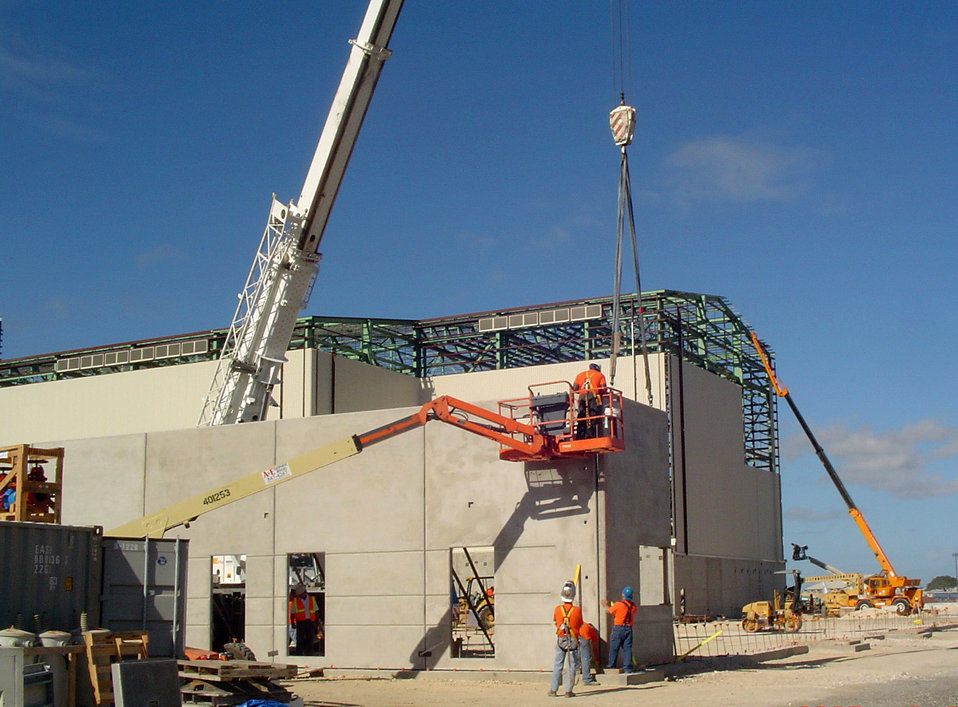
AFCEE builds new C-17 hangar at Hickam

URS employees, contracted by the Air Force Center for Engineering and the Environment, use cranes and other heavy equipment to maneuver pre-case concrete walls into place for the new C-17 Globemaster III Corrosion Control Hangar at Hickam Air Force Base, Hawaii. The hangar will be used for painting and general maintenance functions for the eight C-17 aircraft assigned to Hickam AFB.